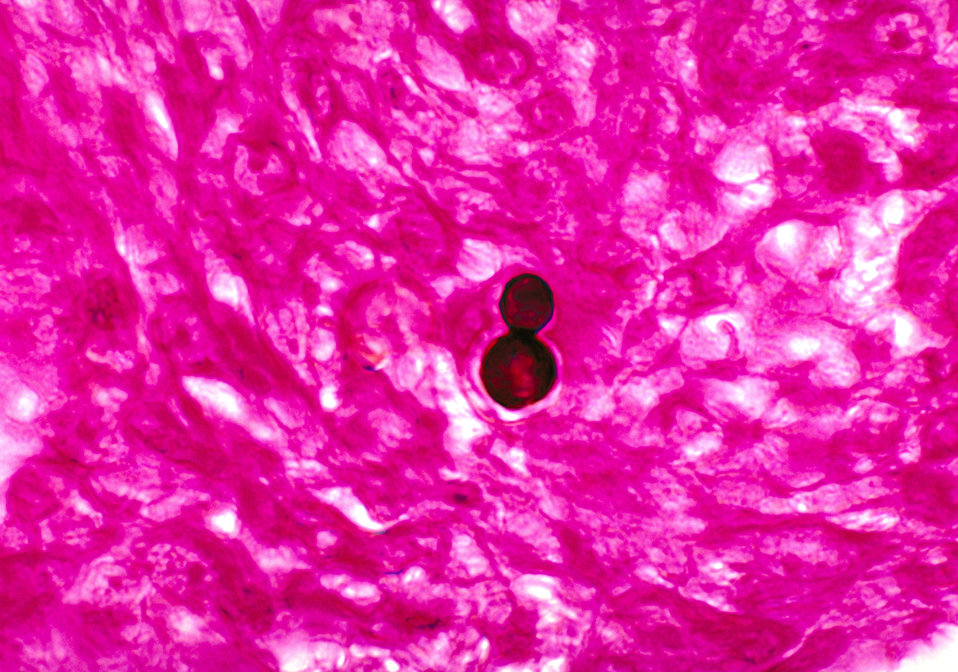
This photomicrograph depicts the fungal agent Blastomyces dermatitidis.